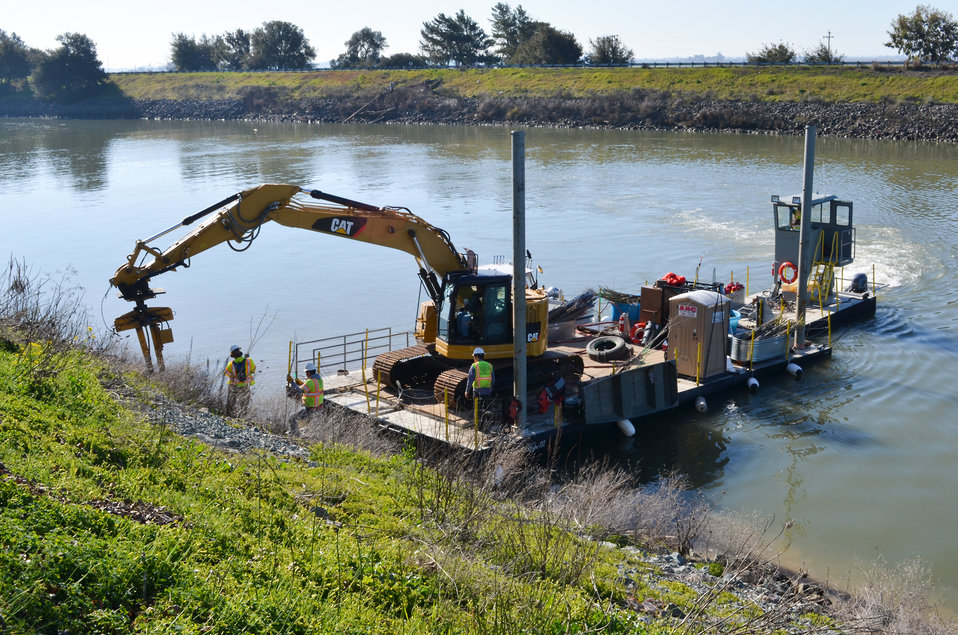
Planting willow poles along Sacramento River

Contract workers plant willow poles along the Sacramento River near Paintersville, Calif., Feb. 11, 2013, as part of a U.S. Army Corps of Engineers Sacramento District project to preserve riparian habitat following emergency levee erosion repairs between 2007 and 2009. The district worked with the U.S. Fish and Wildlife Service and National Marine Fisheries Service to design the project for habitat benefit, and is the first Corps district to receive a variance under the Corps’ levee vegetation policy to plant willows near the levee after engineering analysis showed they won’t threaten the levee.